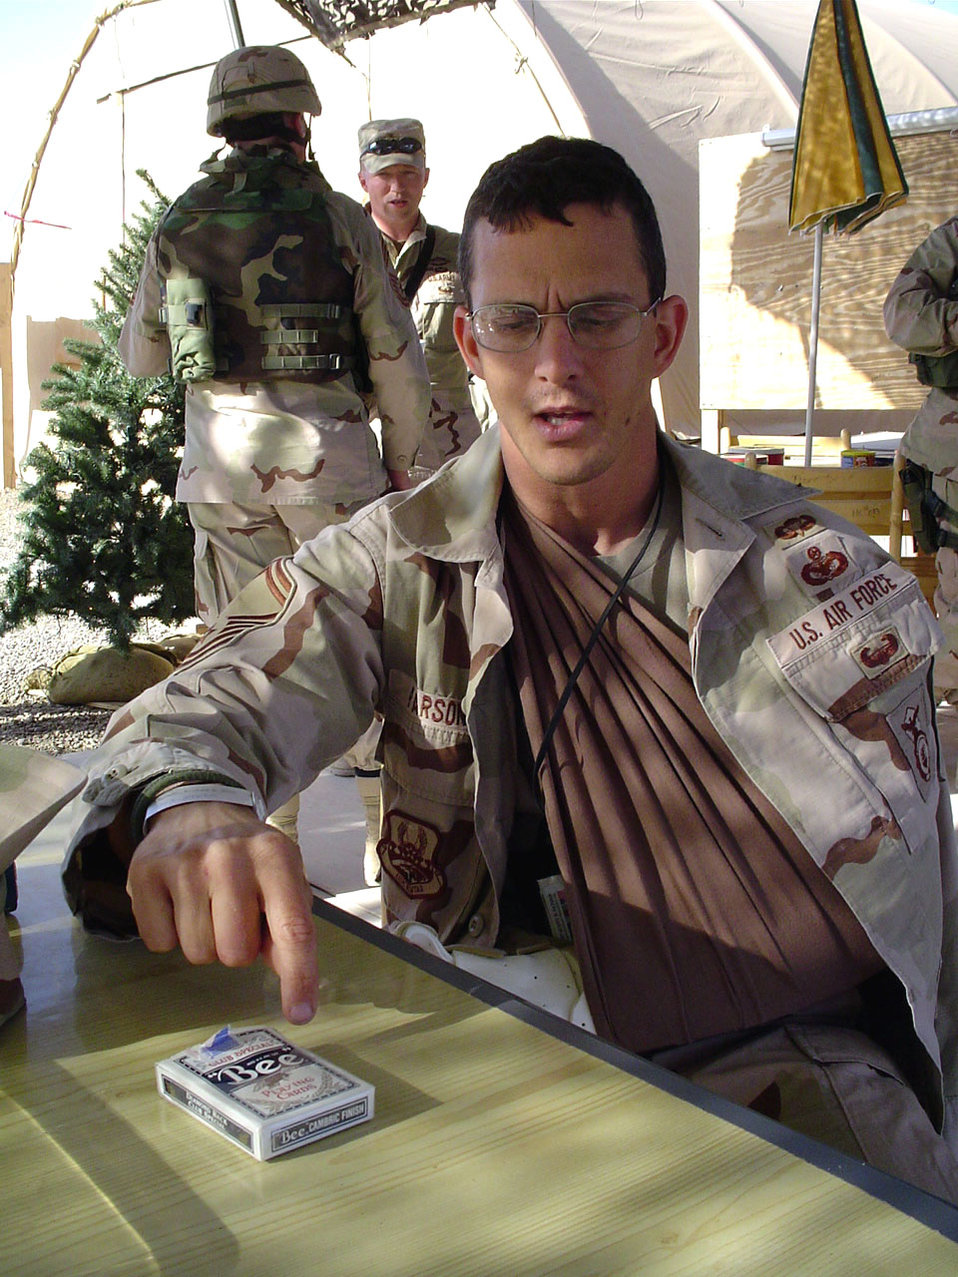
Wounded in action

BAGHDAD, Iraq -- Senior Master Sgt. Richard Parsons uses props to describe the action during an Iraqi insurgent attack on an American convoy north of here March 24. One Soldier was killed; Sergeant Parsons and two other servicemembers were wounded. He is a convoy commander with the 447th Air Expeditionary Security Forces Squadron.